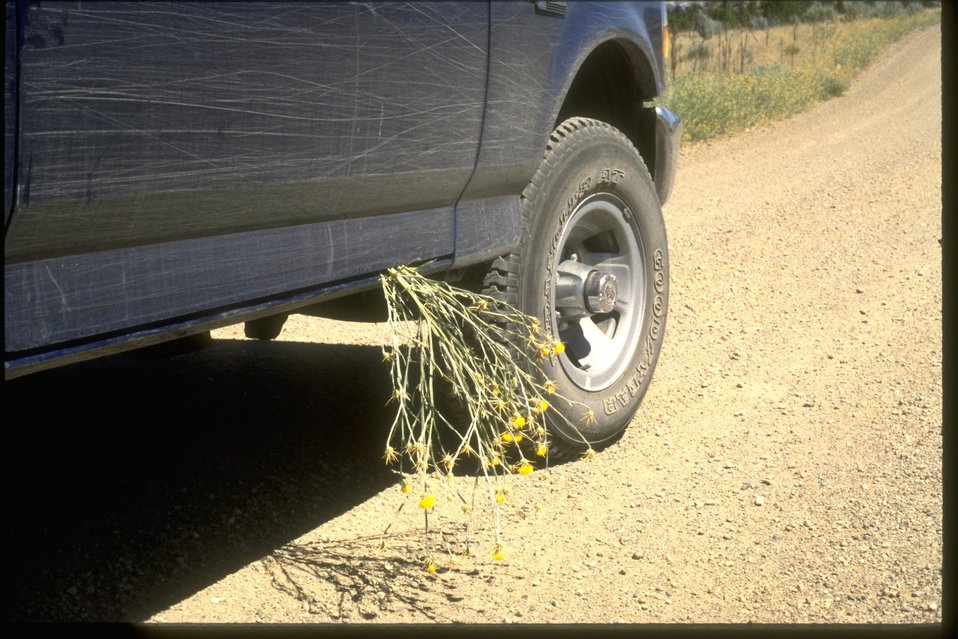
Yellow Starthistle attached to vehicle.